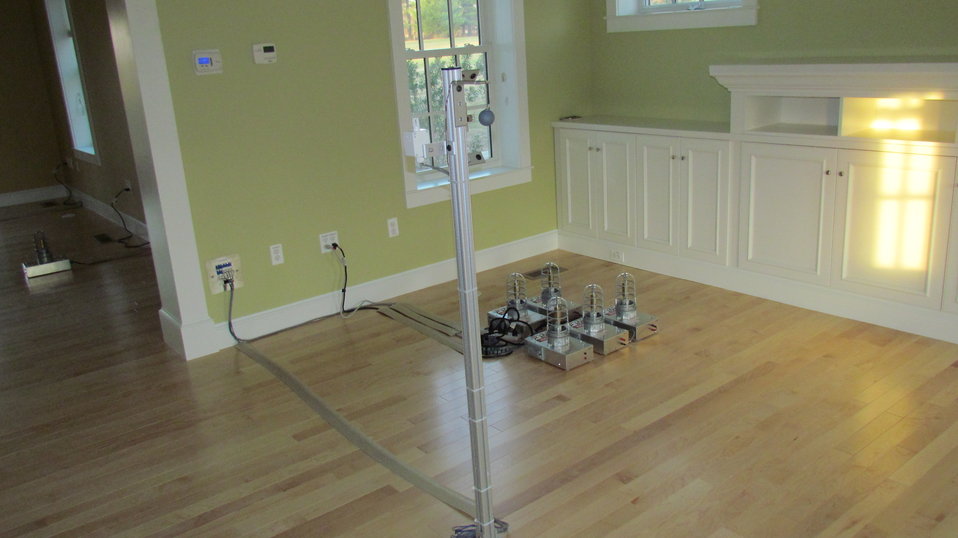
Living room with simulated loads in place and mean radiant temperature and humidity sensor in place.